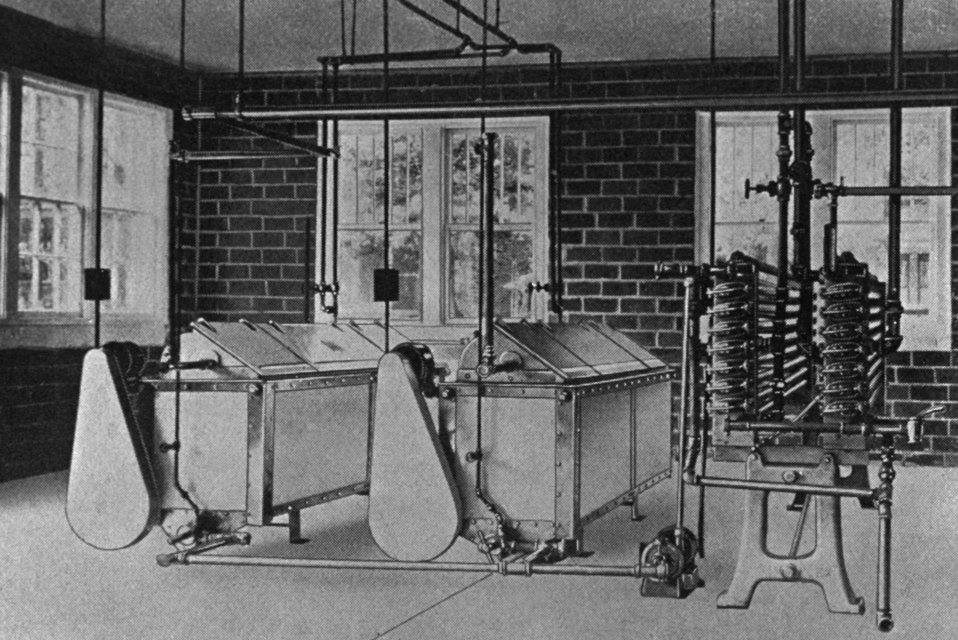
This historic 1929 photograph depicted a 'vat' type pasteurizer and milk cooler, examples of which could be found in properly operated Minnesota dairies.